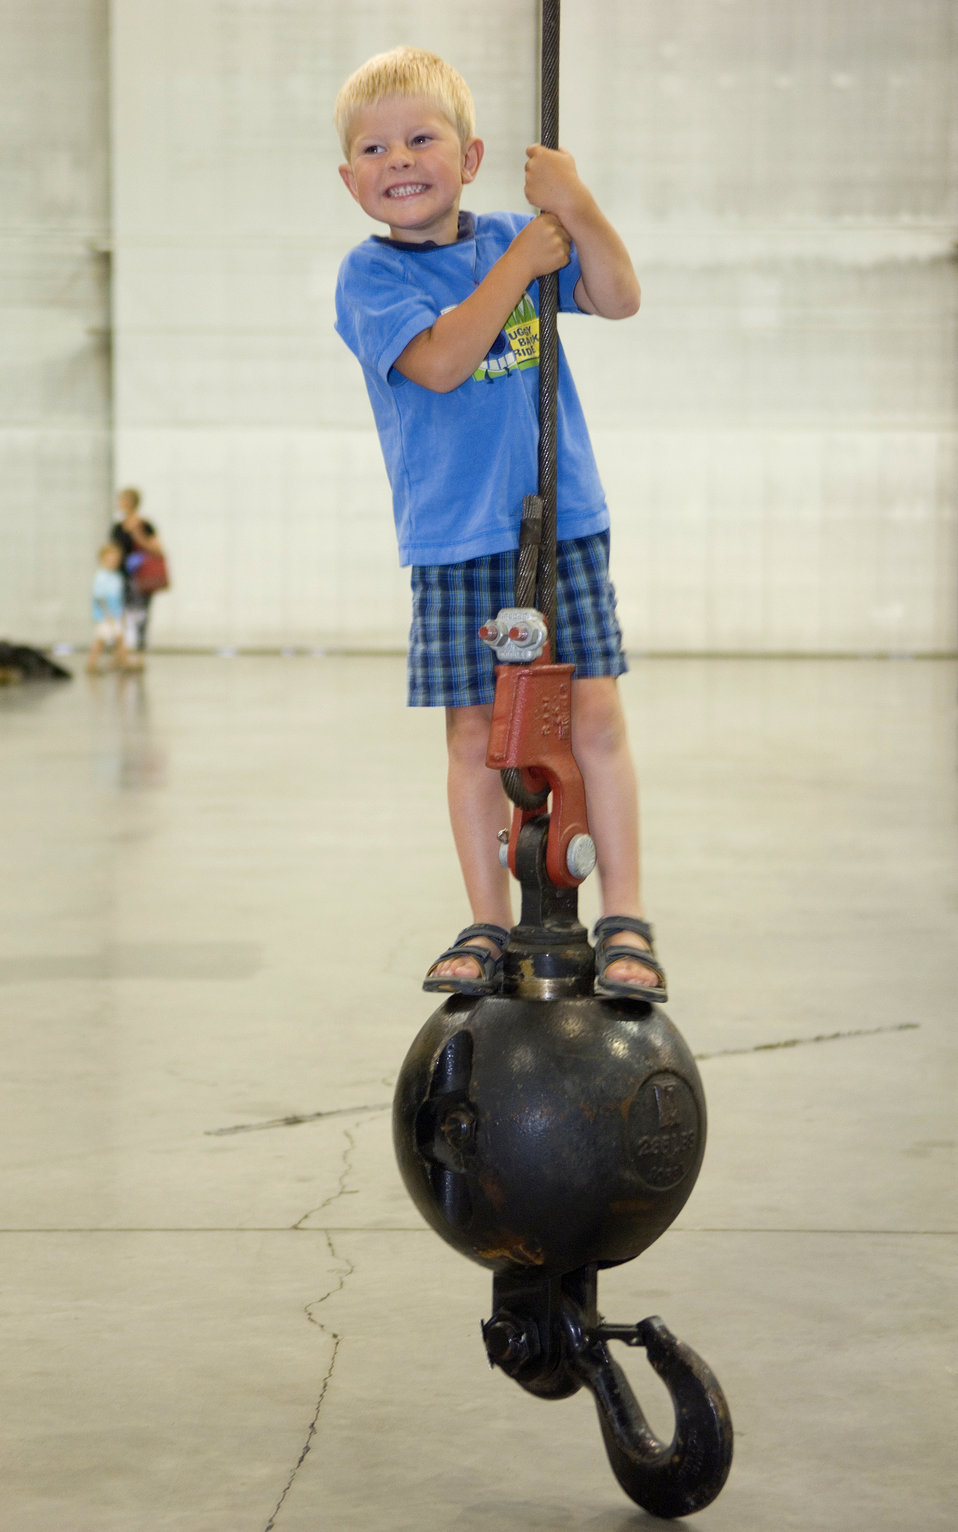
Air Force Week mixes past, present, future at museum

Peter Zwart tries hard to swing on a crane hook provided by the 819th RED HORSE Squadron the Strategic Air and Space Museum during Air Force Week in the Heartland Aug. 13 in Ashland, Neb. Museum officials hosted a day dedicated to the legacy of airpower providing special Air Force demonstration teams and displays. Members of the 819th RED HORSE Squadron are from Malmsrom Air Force Base, Mont.